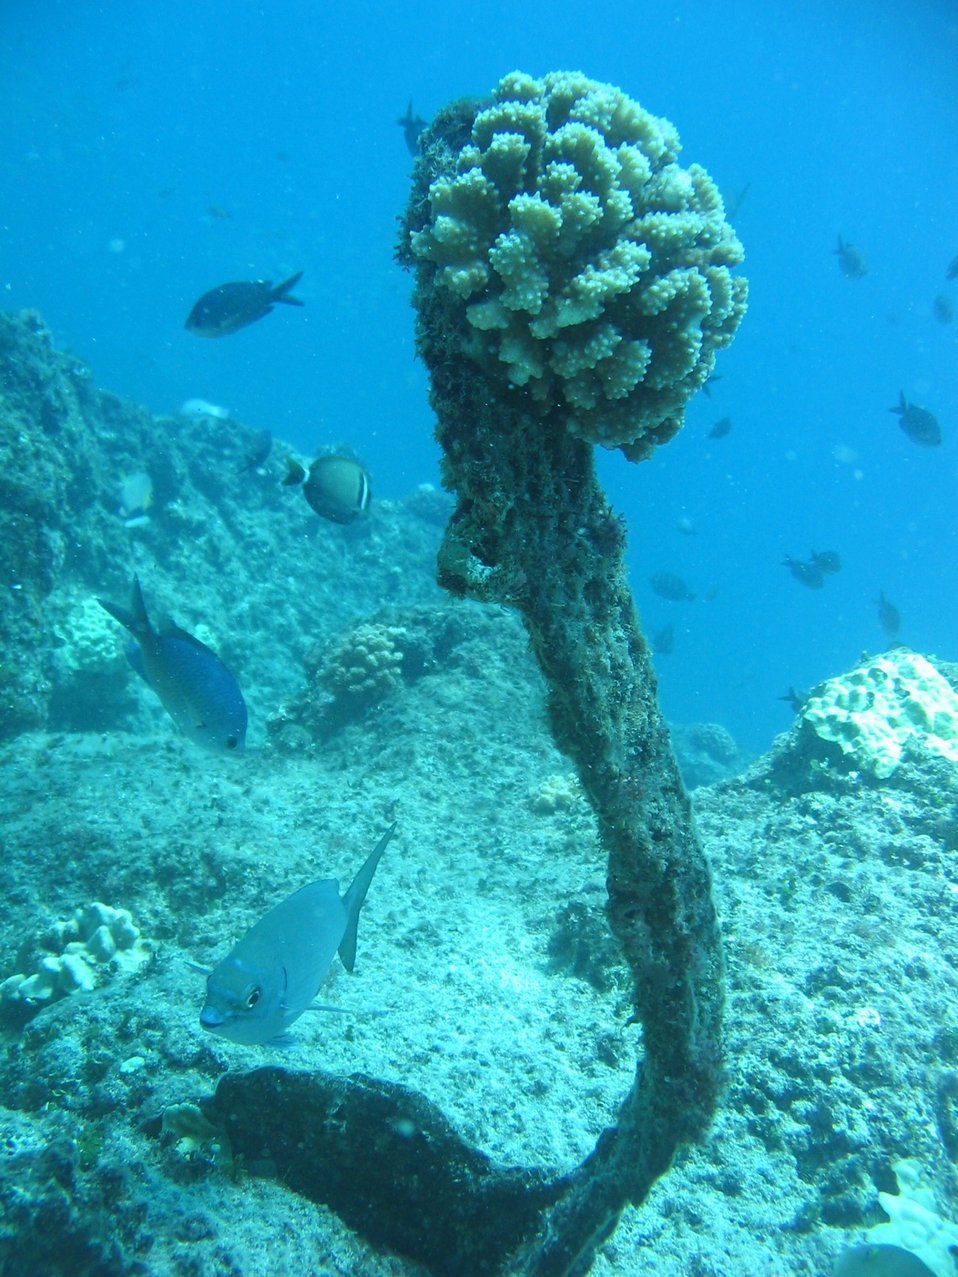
Bent metal rod with coral growing at tip on modern ship wreck at Pearl and Hermes Reef.